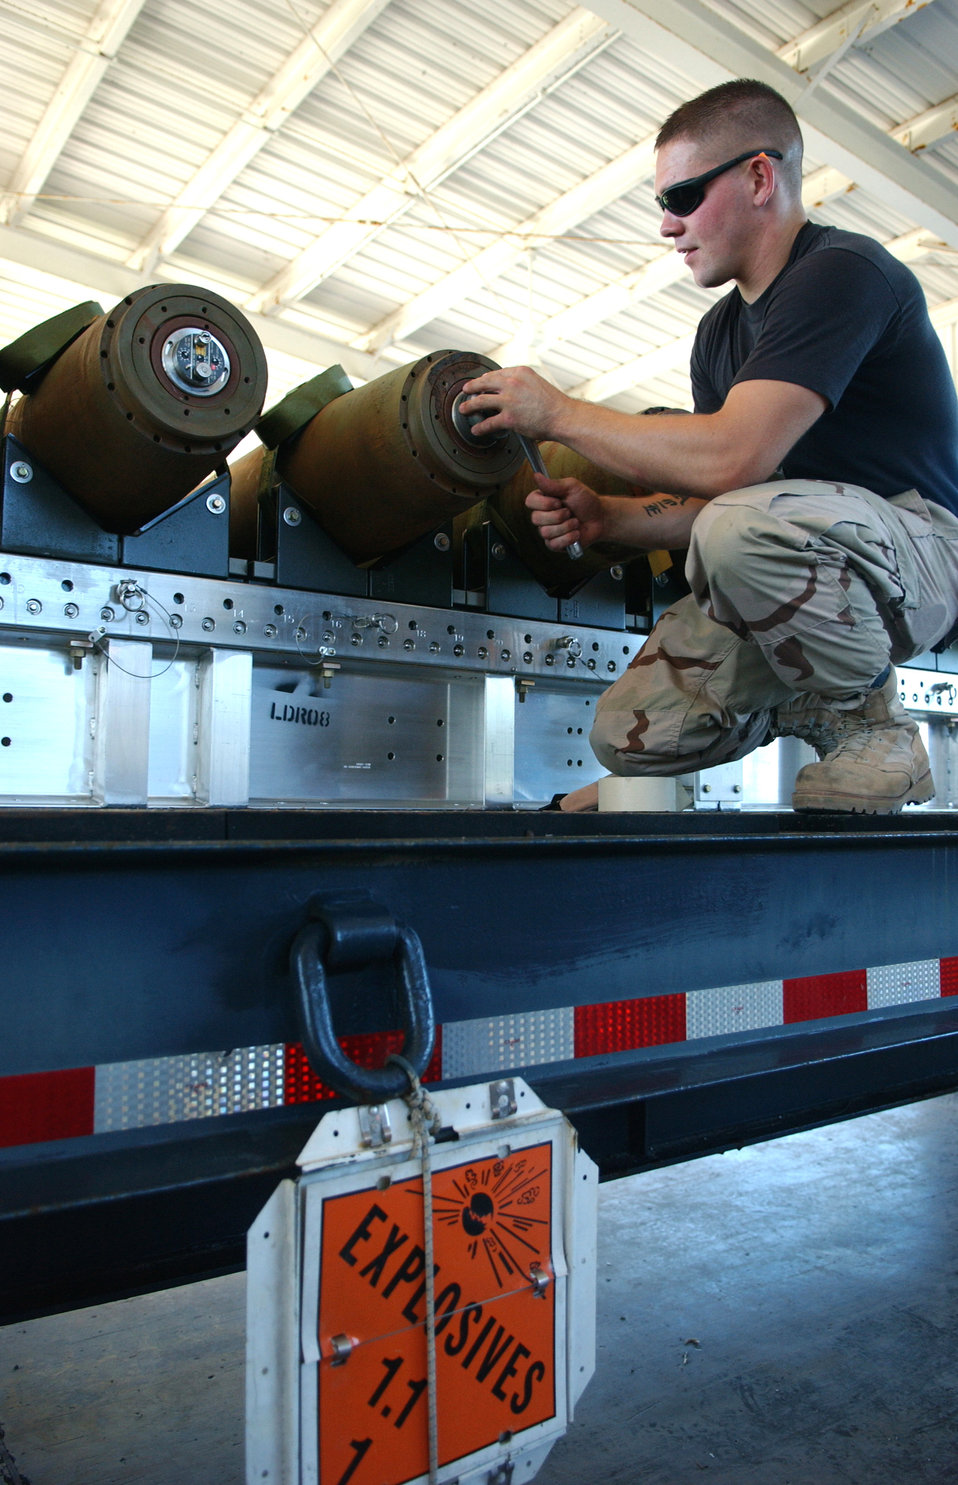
Munitions check

An Airman does a fuse check on bombs at a base supporting Operating Enduring Freedom on Wednesday, May 17, 2006. The Airman, of the 40th Air Expeditionary Group, deployed here from Barksdale Air Force Base, La.